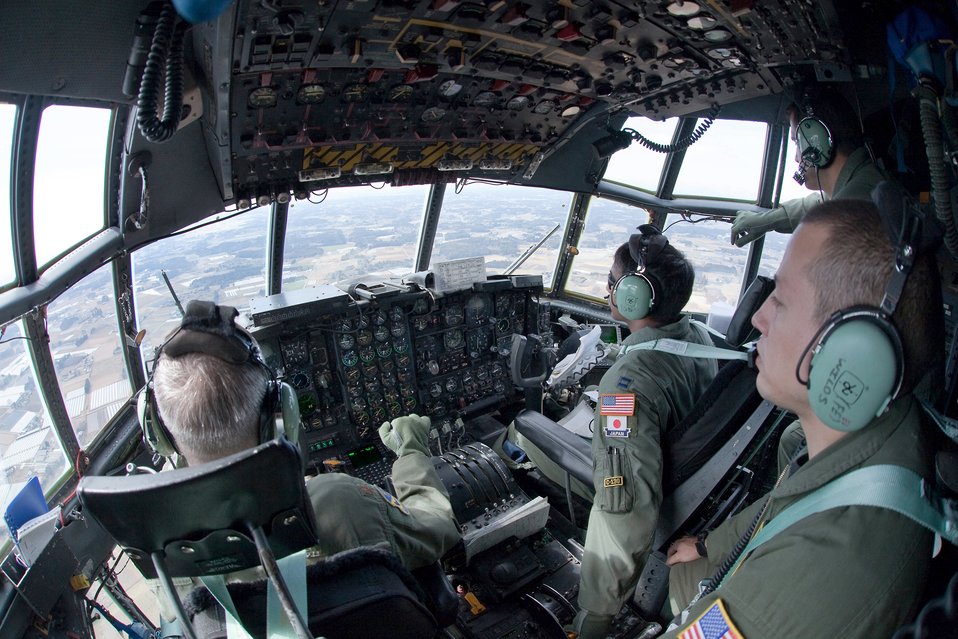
Airmen deliver boron

Aircrew members assigned to the 36th Airlift Squadron fly March 19, 2011, above Japan, en route to deliver seven pallets of boron to Japan Air Self-Defense Force members at Hyakuri Air Base, Japan.